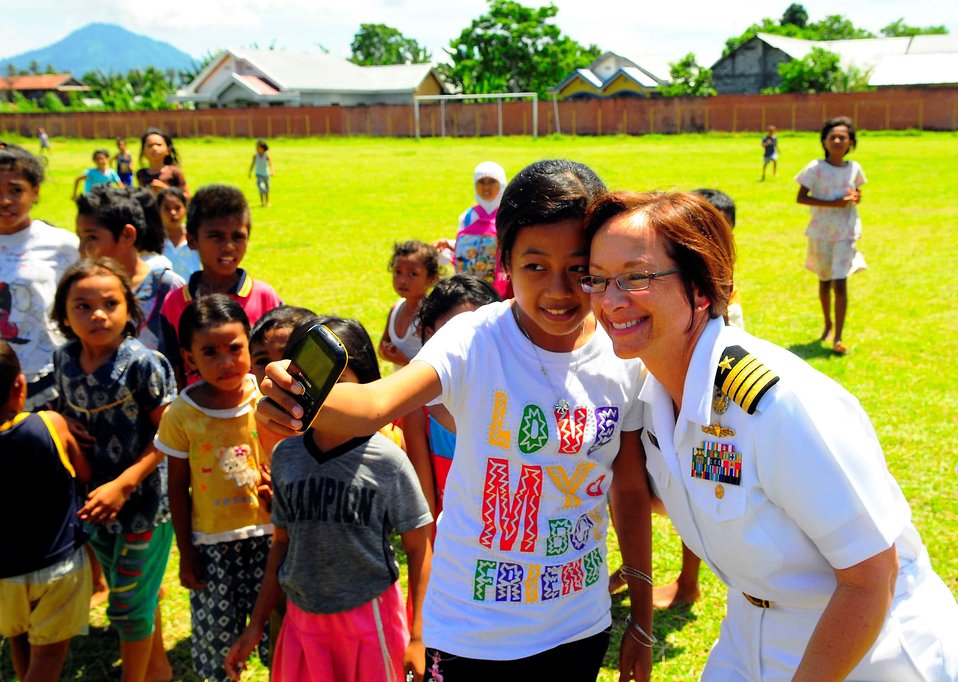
Pacific Partnership 2010 Commander Capt. Lisa M. Franchetti poses for a photo with an Indonesian girl prior to participating in the opening ceremony, marking the beginning of operations by Military Sealift Command hospital ship USNS Mercy (T-AH 19) crewmembers in support of Pacific Partnership 2010 in Tobelo, Indonesia, on July 13, 2010. Pacific Partnership 2010 is the fifth is a series of annual U.S. Pacific Fleet humanitarian and civic assistance endeavors to strengthen regional partnerships.